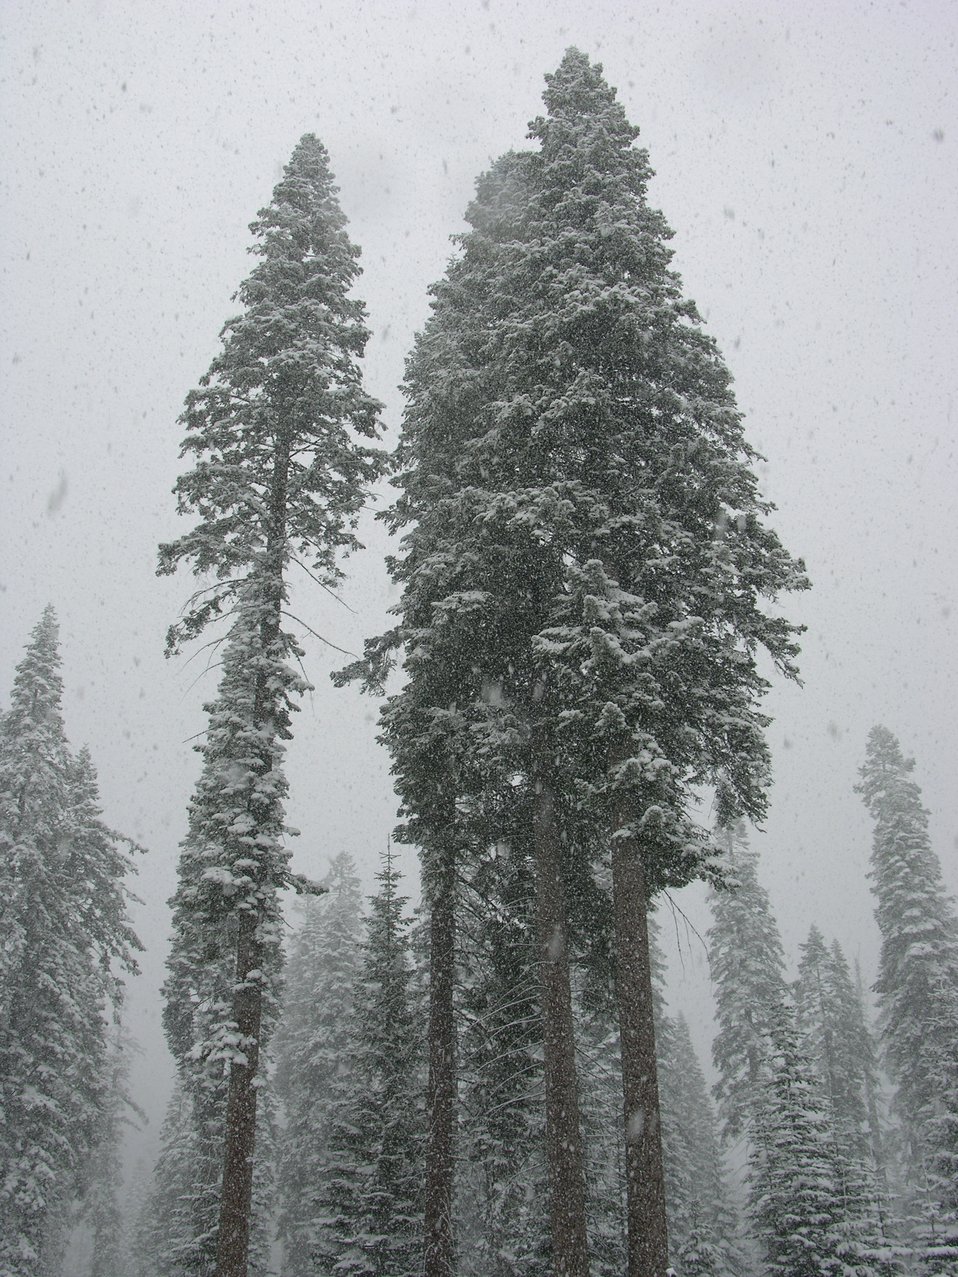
Snow in Sequoia National Park.